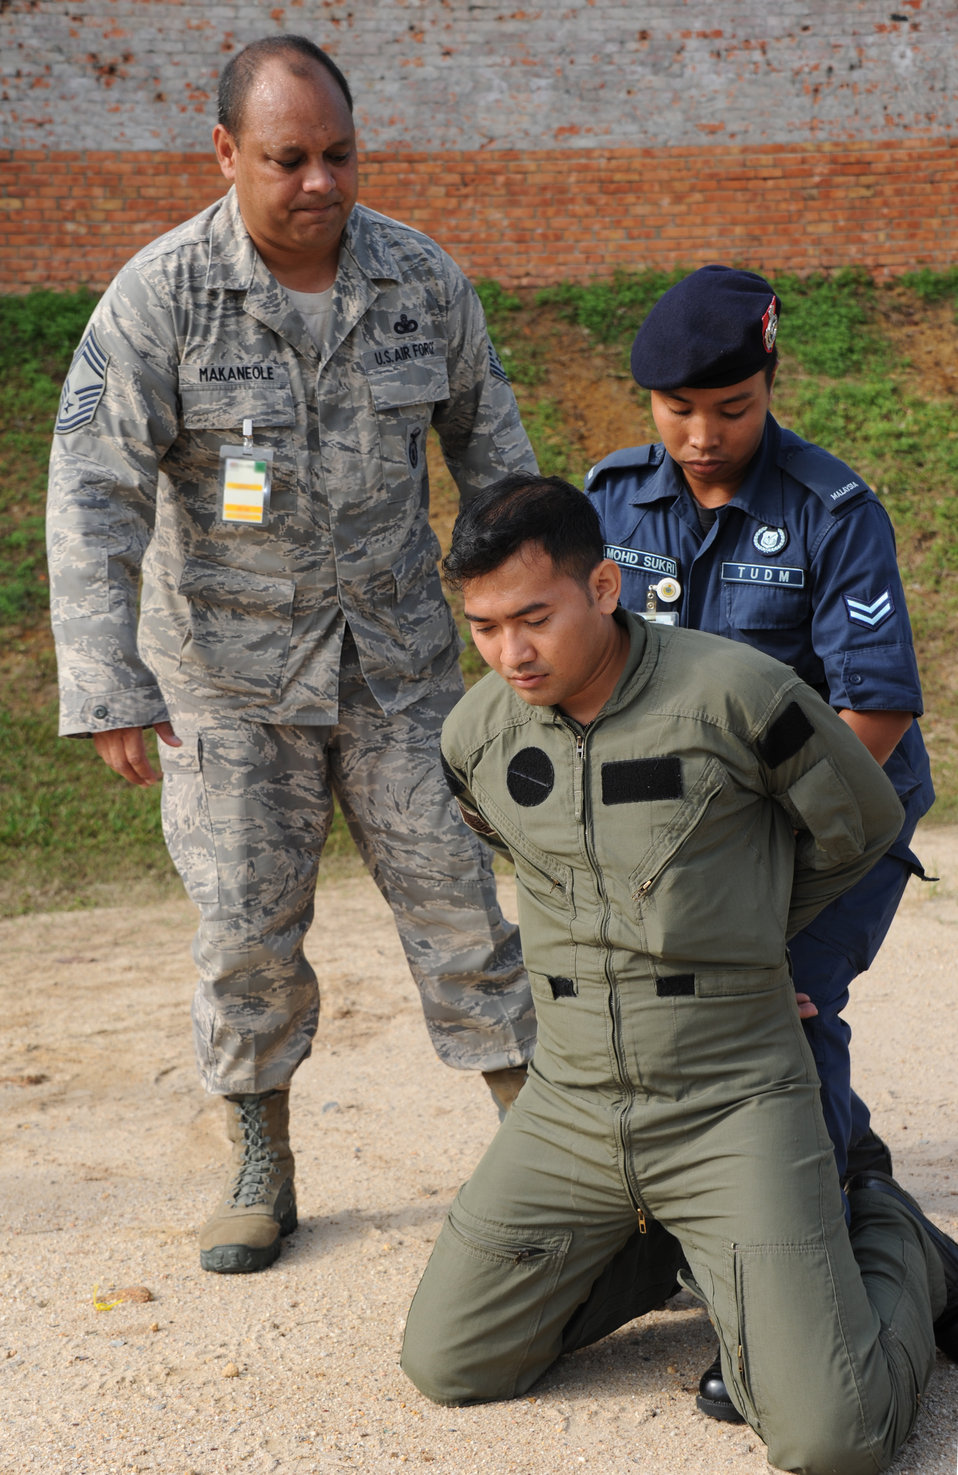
Cope Taufan 2012

Chief Master Sgt. William Makaneole, a Pacific Air Forces plans and programs project officer, watches as Royal Malaysian Air Force Cpl. Mohd Sukri Bin Nor Saidi, of Provost Squadron 104, searches a simulated suspect during a subject matter expert exchange at Cope Taufan 2012 at TUDM Butterworth on April 5, 2012.